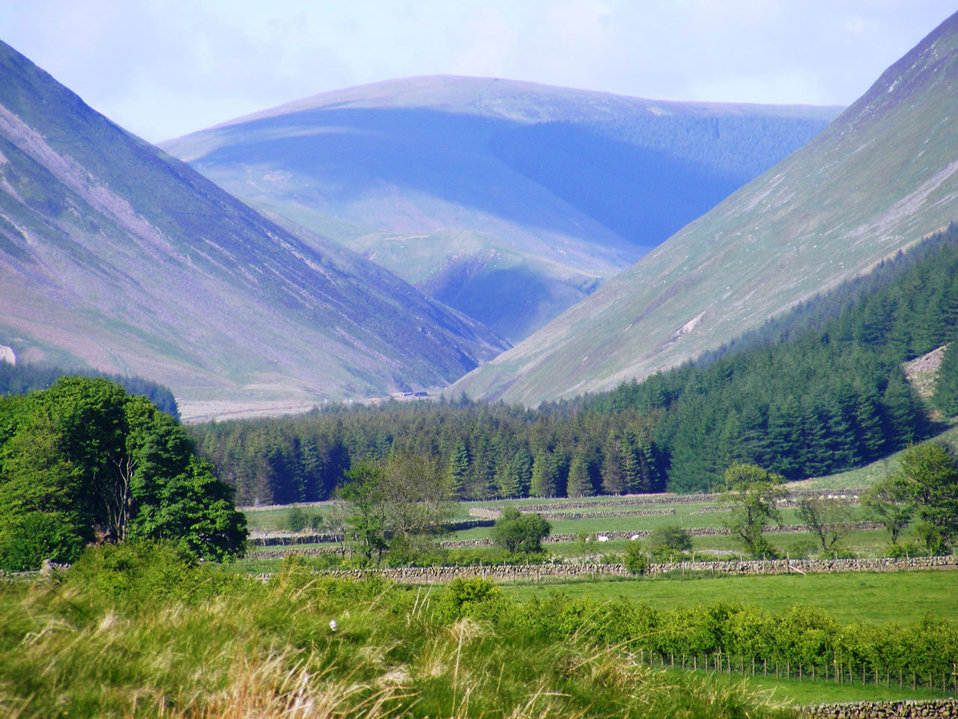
Interlocking spure

The yarrow valley, dumfriesshire.